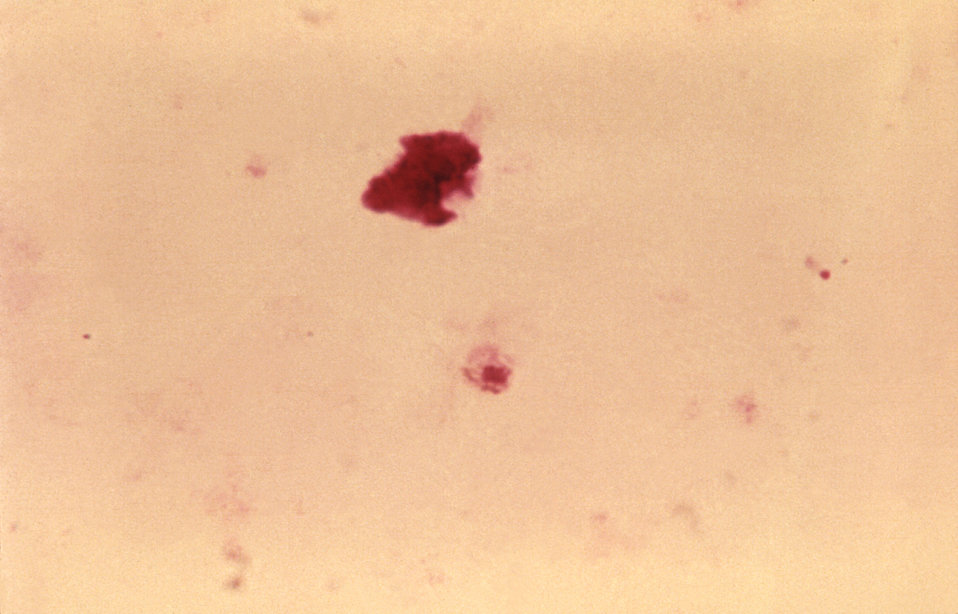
This thin film Giemsa stained micrograph depicts a Plasmodium falciparum gametocyte.